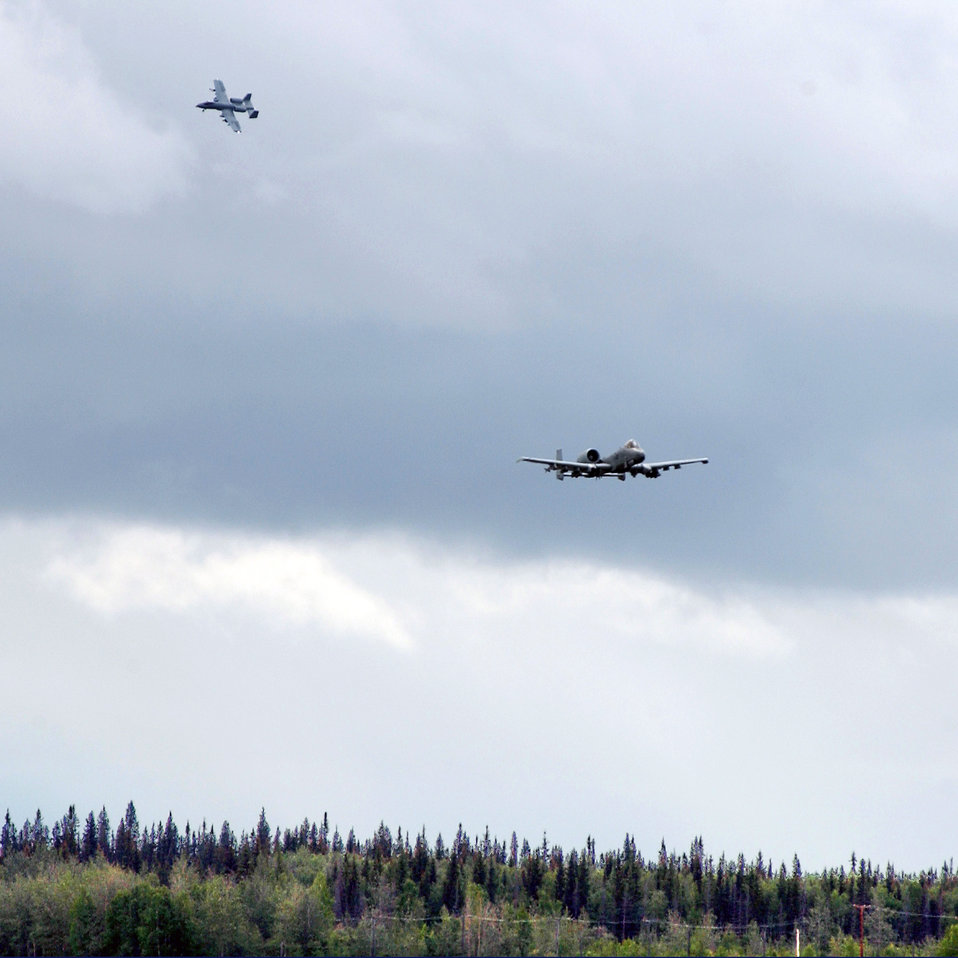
A-10s depart Eielson

Two A-10 Thunderbolt IIs from the 355th Fighter Squadron conduct their last flight over Eielson Air Force Base, Alaska, July 31. The first two A-10s arrived at Eielson Dec. 18, 1981; the last two A-10s are set to leave Aug. 15 for Moody AFB, Ga., and Gowen Field, Idaho.